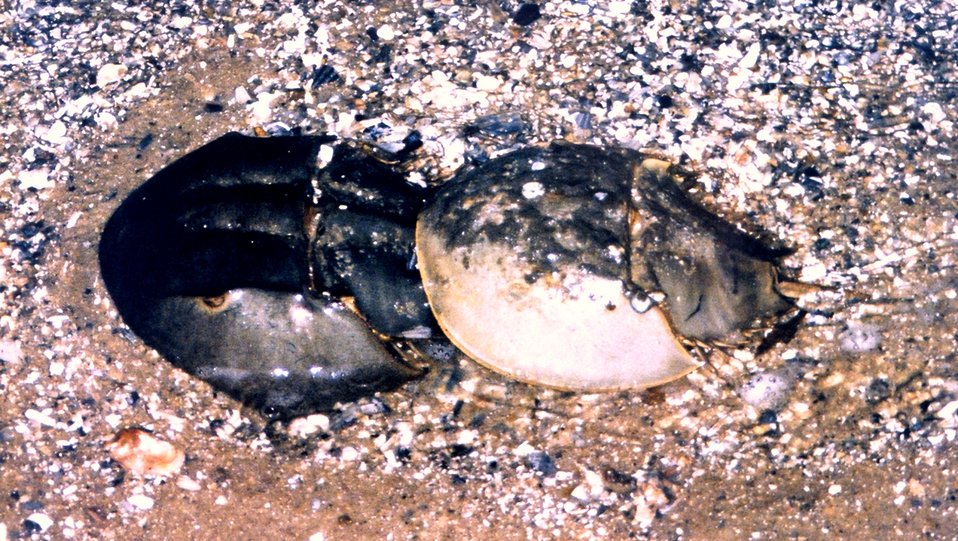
Class B pair of horseshoe crabs.